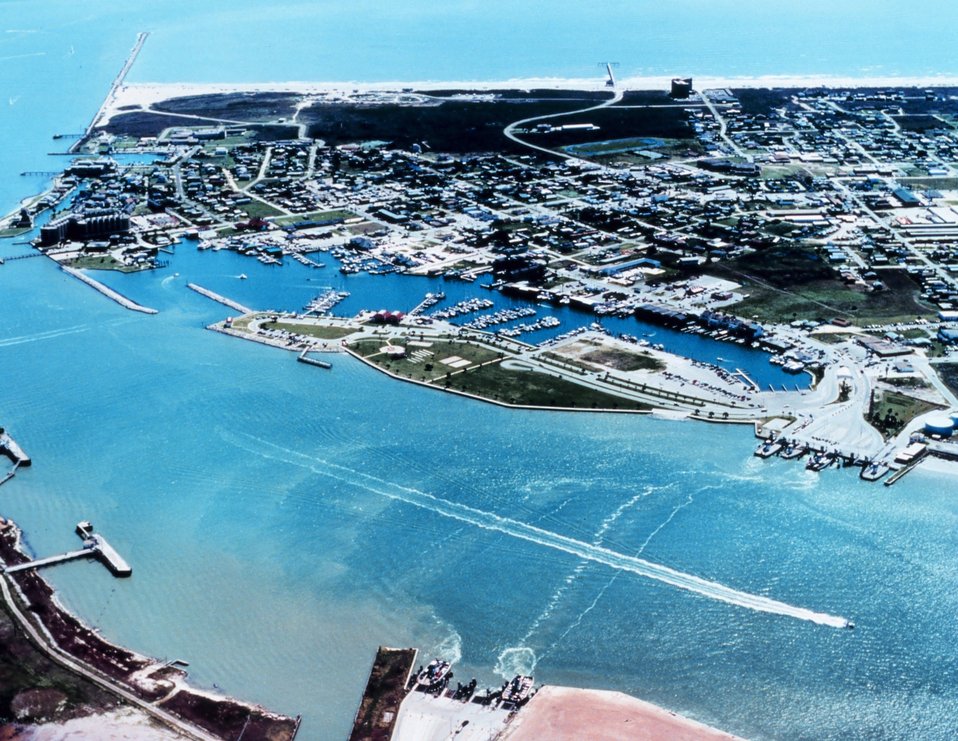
2750 North Latitude 9704 West Longitude.